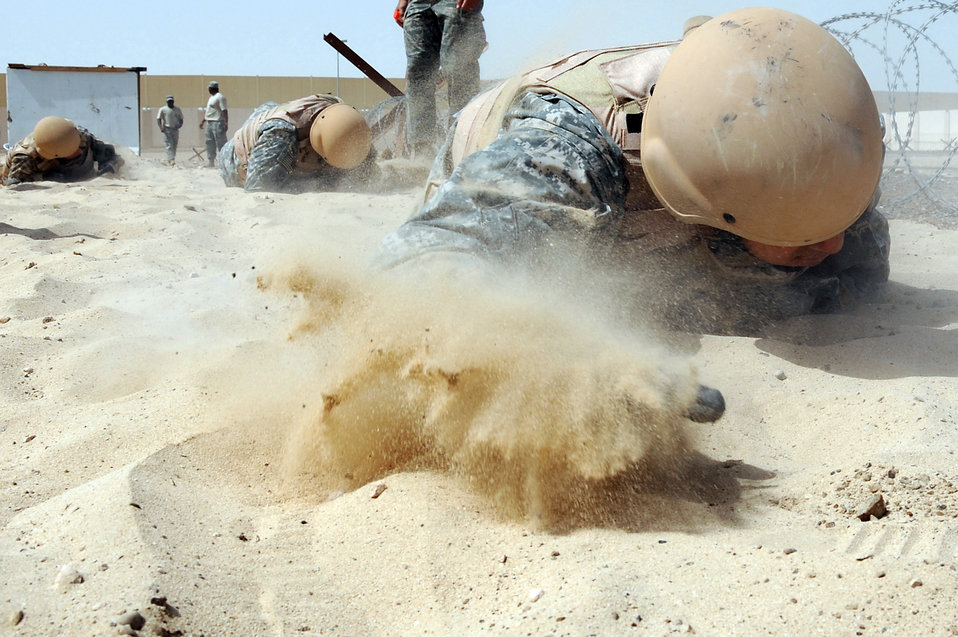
Challenge pushes Airmen, Soldiers

Army Sgt. Vincent McGoldrick pulls himself through a 25 foot sandpit on a Defender Challenge course April 25 at an air base in Southwest Asia. Teams from different units ran the course, testing stamina, strength and brain power. Sergeant McGoldrick is assigned to the 5-52 Air Defense Artillery Battalion deployed out of Fort Bliss, Texas.